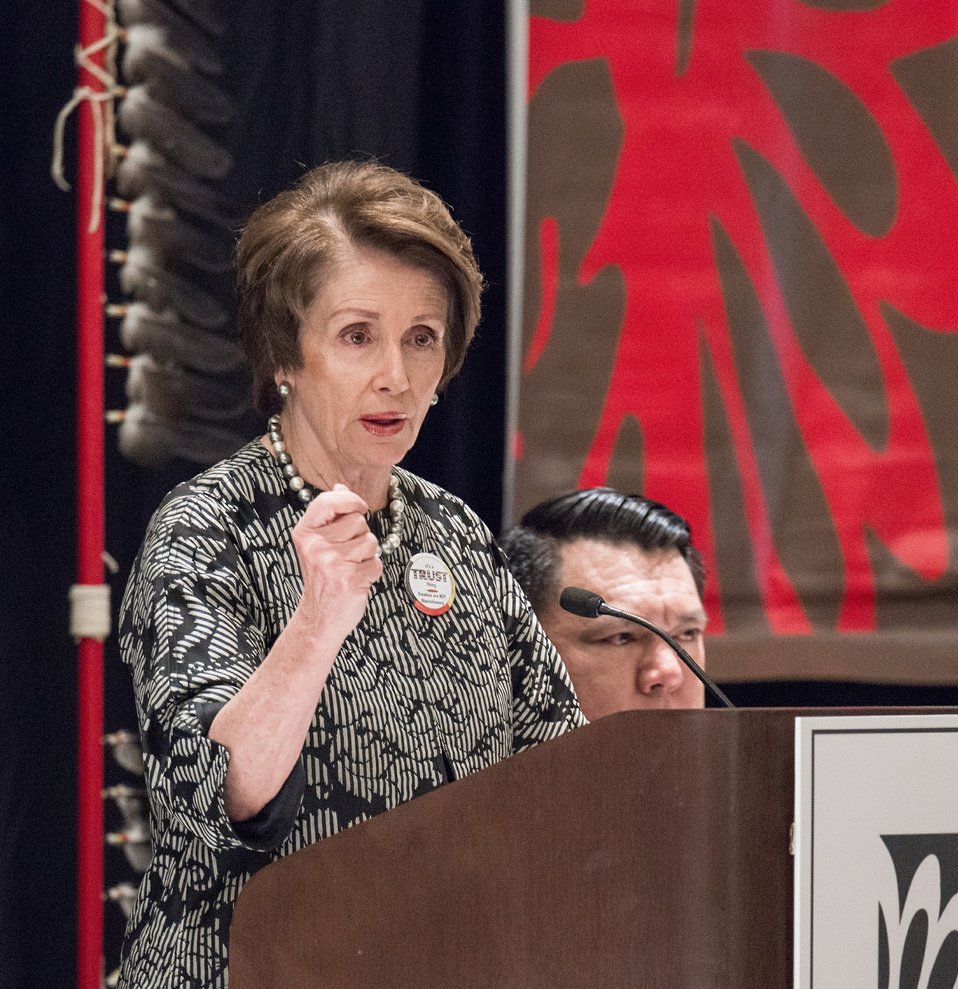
Congresswoman (CA) Nancy Pelosi addresses the 2014 National Congress of American Indians (NCAI) Executive Council Winter Session at the Westin Washington City Center in Washington, D.C. on Thursday, Mar. 13, 2014.